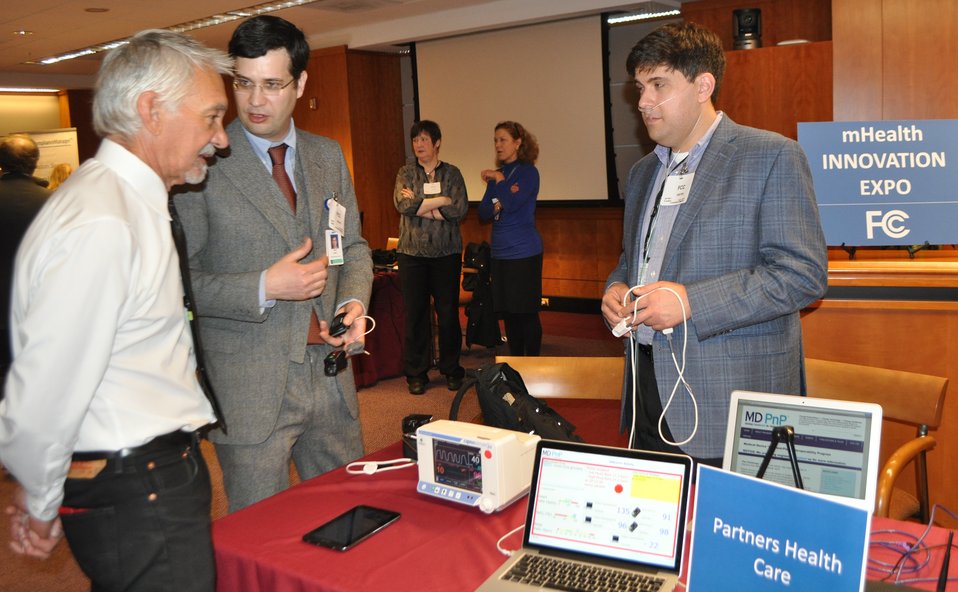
12.6.13 mHealth Innovation Expo

FCC mHealth Innovation Expo.